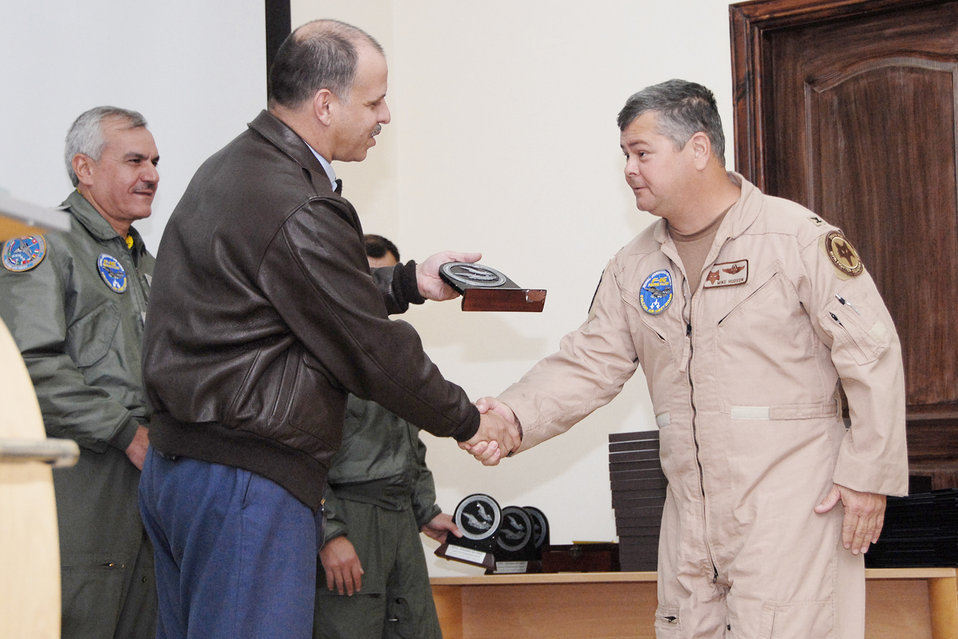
Falcon Air Meet

His Royal Highness Prince Feisal Bin Al Hussein presents a Falcon Air Meet 2009 award Nov. 3, 2009, to Col. Mike Hudson, commander of the South Carolina Air National Guard's 169th Operations Group based at McEntire Joint National Guard Base, S.C. The unit represented the United States in the three-nation F-16 Fighting Falcon competition at Mwaffaq Salti Air Base, Jordan.